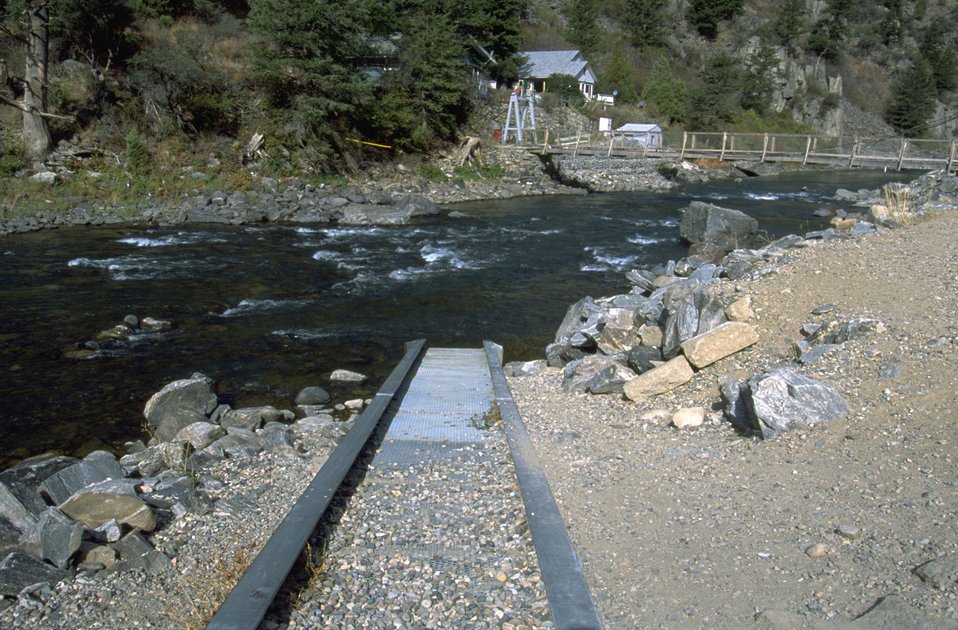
Boat Ramp into the Madison - Foot Bridge in the background